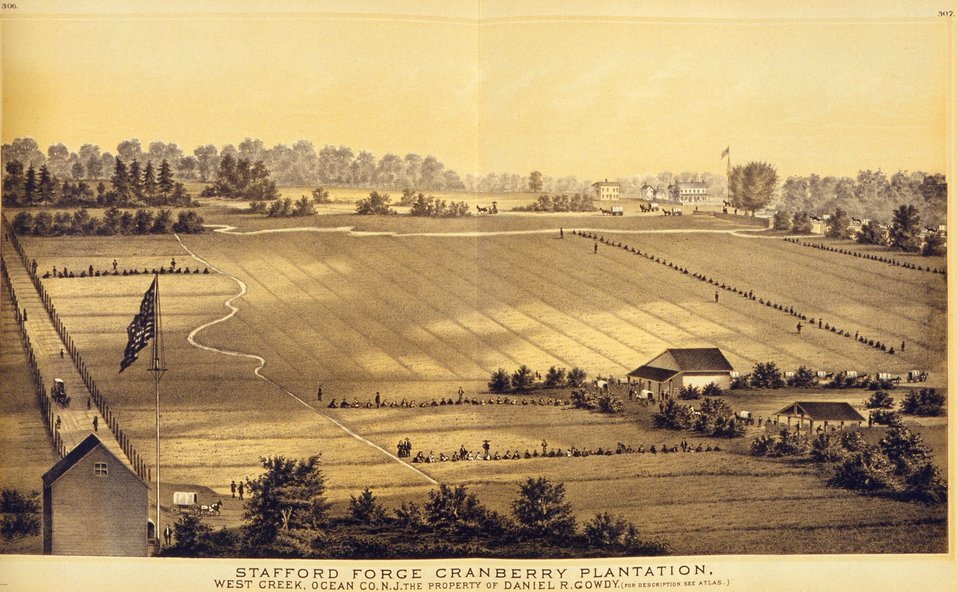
Stafford Ford Cranberry Plantation, West Creek, Ocean County, N.J. P. 307. 'Historical and Biographical Atlas of the New Jersey Coast,' by T. F. Rose, 1878.